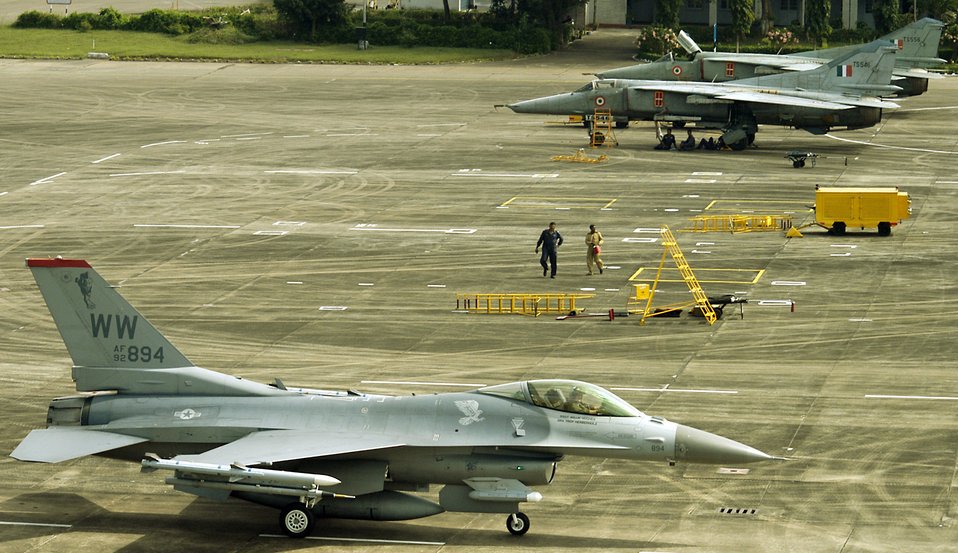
Cope India 06

KALAIKUNDA AIR STATION, India (AFPN) -- A 13th Fighter Squadron F-16 Fighting Falcon taxis past Indian Air Force MiG-27 fighters on the flightline here. American and Indian Airmen are participating in exercise Cope India 06, which began Nov. 7. The exercise will help enhance interoperability between the two air forces. The squadron deployed from Misawa Air Base, Japan.